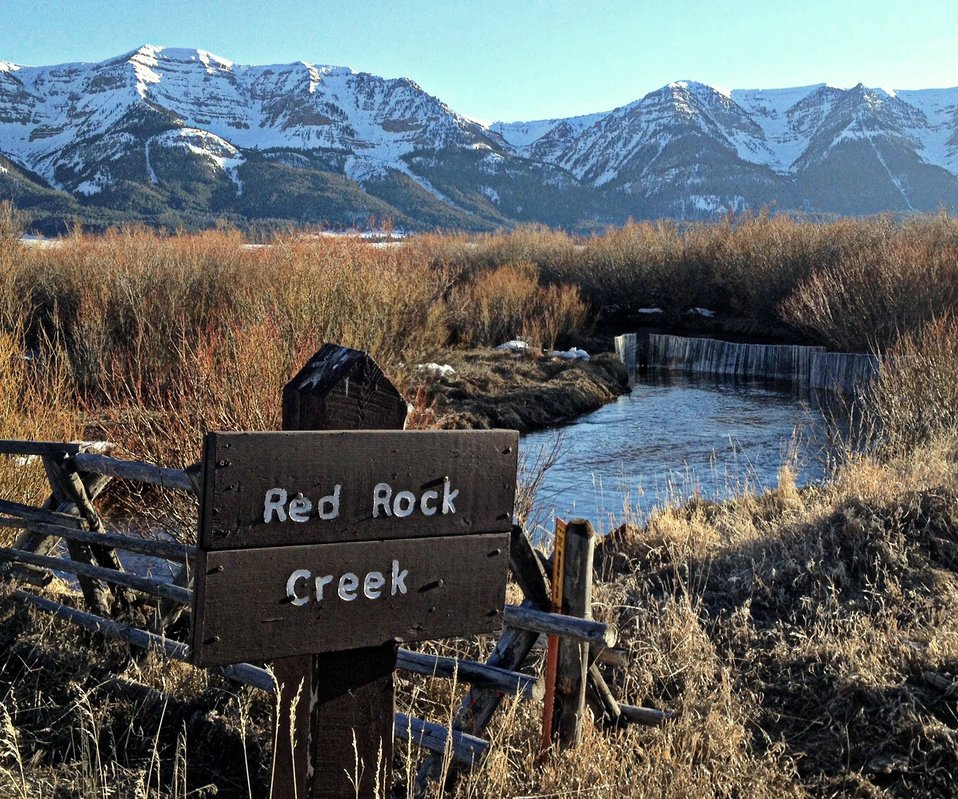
Primitive, but effective...

A weir (just left of center) creates a temporary obstruction that guides migrating fish into a trap. These trapped fish provide Montana Fish and Wildlife Conservation Office biologists access to important data to assess fish population trends on Red Rock Lakes National Wildlife Refuge in southwest Montana.